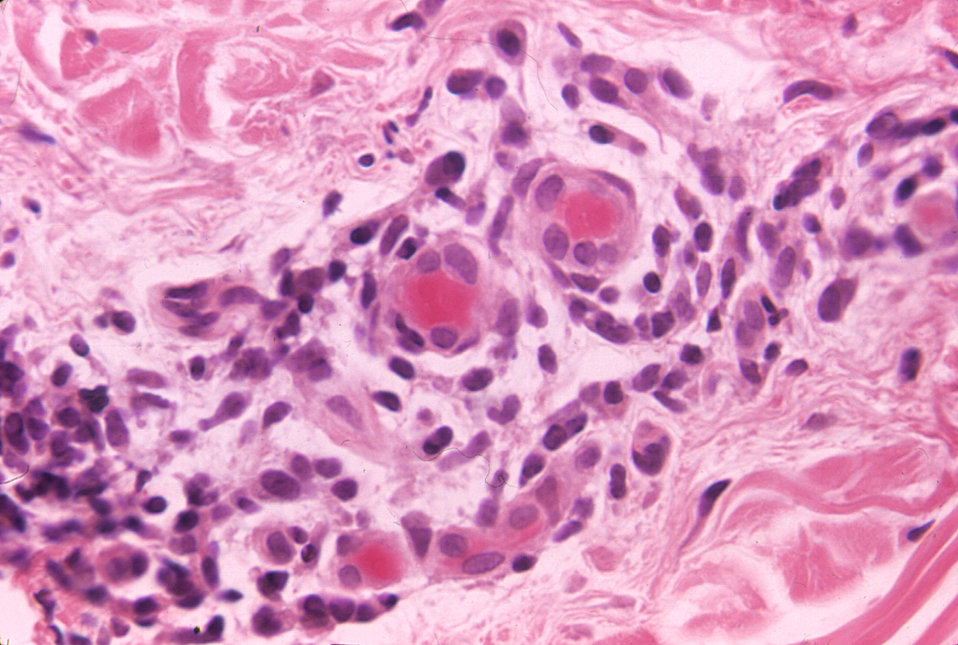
Histopathology of chronic inflammatory reaction to Schistosoma mansoni antigen in monkey infected with Mycobacterium tuberculosis. Skin.